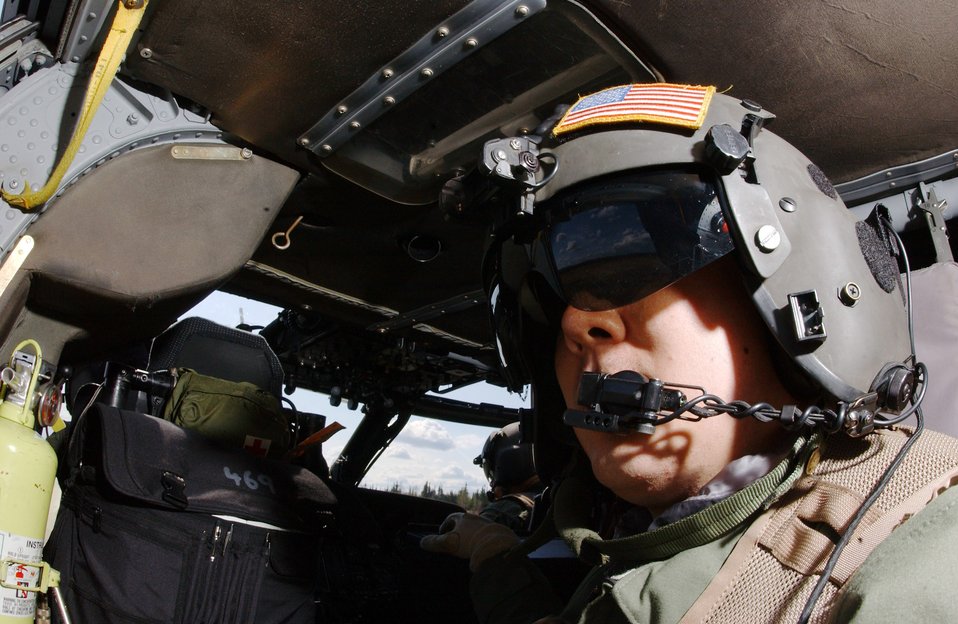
Keeping an eye on gas

Staff Sgt. Ken Gillum scans the terrain for suspicious activity on board an HH-60G Pave Hawk during Exercise Northern Edge May 10 over the Trans-Alaska Pipeline System. The joint training exercise is designed to practice operations, techniques and procedures and enhance interoperability among all the services and civilian emergency response teams. Sergeant Gillum is an aerial gunner assigned to Det. 1, 210th Rescue Squadron.